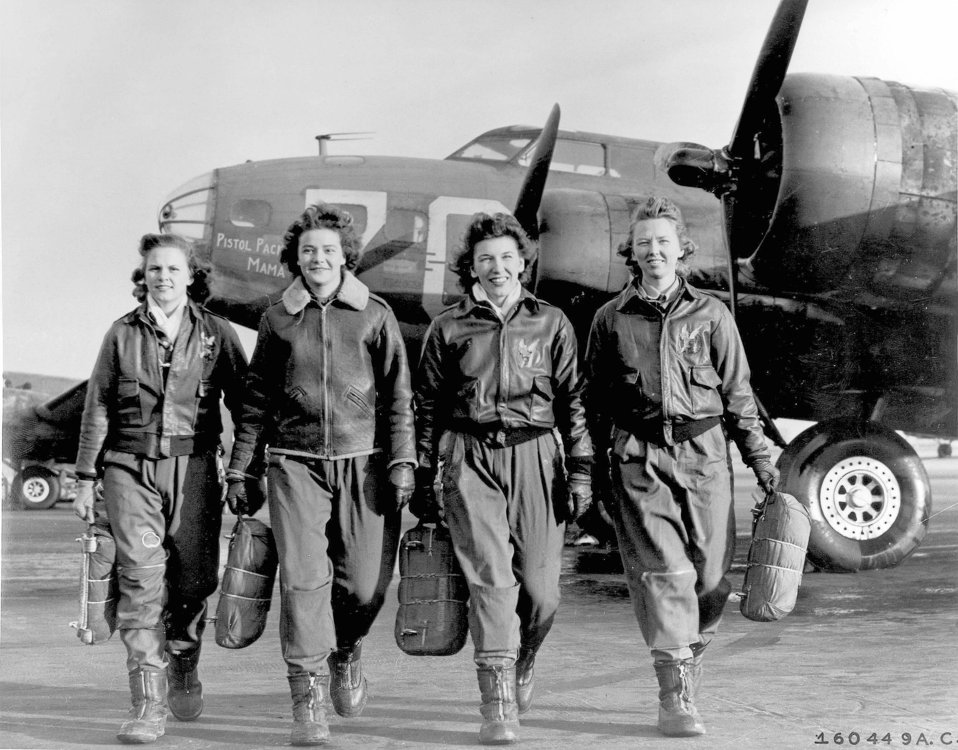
Air Force Celebrates Women's History Month

These four female pilots leaving their ship at the four engine school at Lockbourne are members of a group of WASPS who have been trained to ferry the B-17 Flying Fortresses.